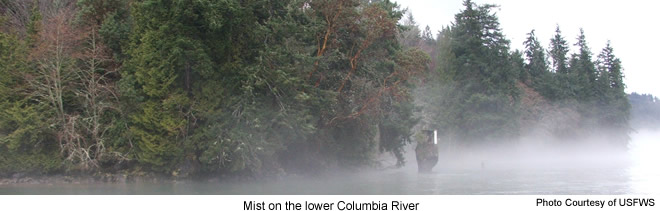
Mists on the Lower Columbia River - Julia Butler Hansen NWR

The Lower Columbia area provides habitat for a number of threatened and endangered species in the Julia Butler Hansen NWR.